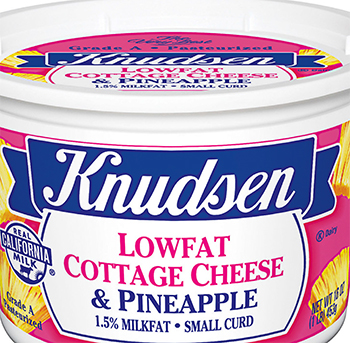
RECALLED – Cottage Cheese products

May 17, 2014 – Product Recall – Kraft Foods Group Voluntarily Recalls Select Cottage Cheese Products Due to Out-of-Standard Storage Temperatures
Certain Knudsen Cottage Cheese, Breakstone’s Cottage Cheese, Simply Kraft Cottage Cheese and Daily Chef Cottage Cheese Products Included in the Recall
.